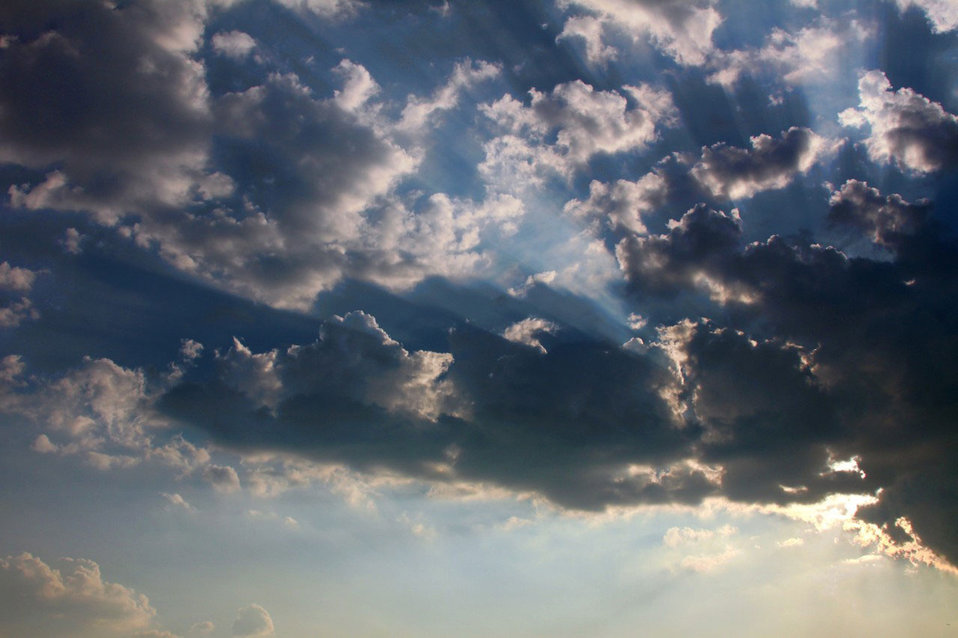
Clouds

Sun beams through clouds on afternoon sky.